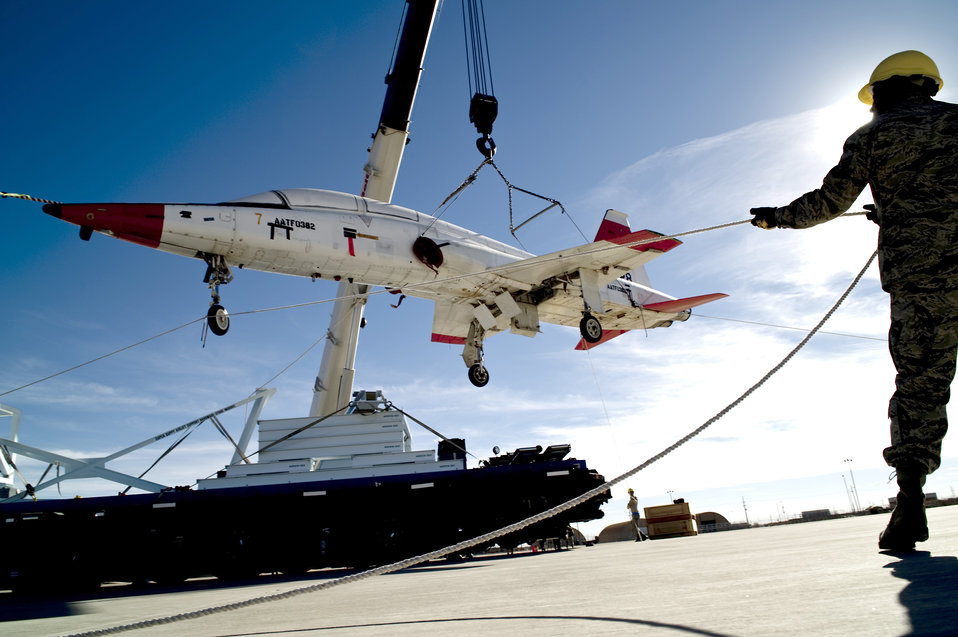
Holloman Airmen provide 5th generation fighter support

Two T-38 Talons sit inside NASA's Super Guppy aircraft Dec. 14, 2010, after being shipped to Holloman Air Force Base, N.M. The shipment is the first two of 15 T-38s to be shipped to Holloman AFB to be inspected and regenerated before being flown to Joint Base Langley-Eustis, Va. M1 Support Services officials maintain the T-38 Consolidated Aircraft Maintenance program and is the main depot in Air Combat Command for repairing the T-38s. After every 450 flight hours at their operating location, the T-38s will come back for an inspection.